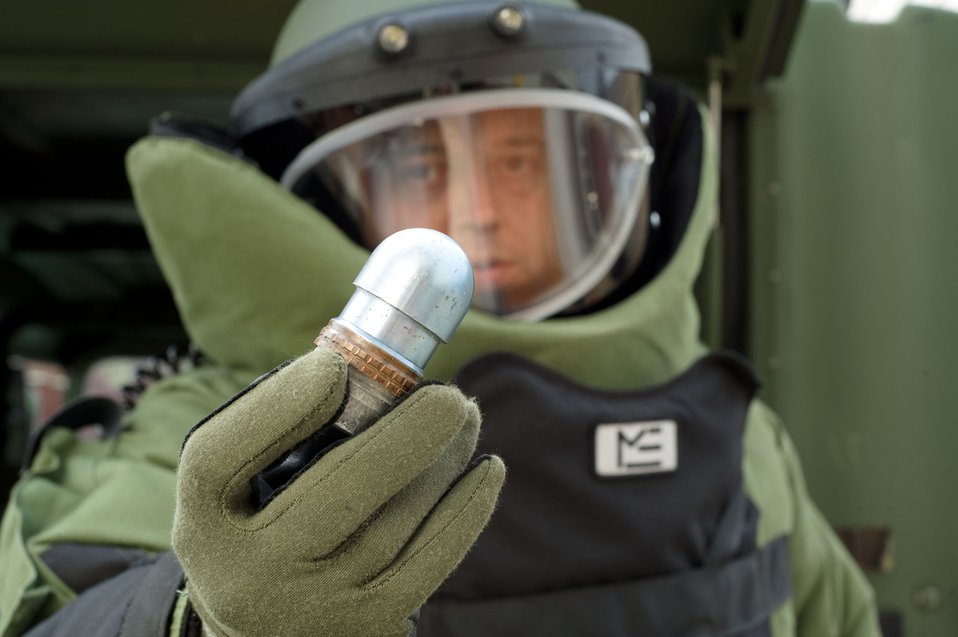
Watch out for these...

Staff Sgt. Blake Lundstrom holds a 40mm grenade March 10, 2010, at Langley Air Force Base, Va. He is the explosive ordnance disposal team lead with the 633rd Civil Engineer Squadron.